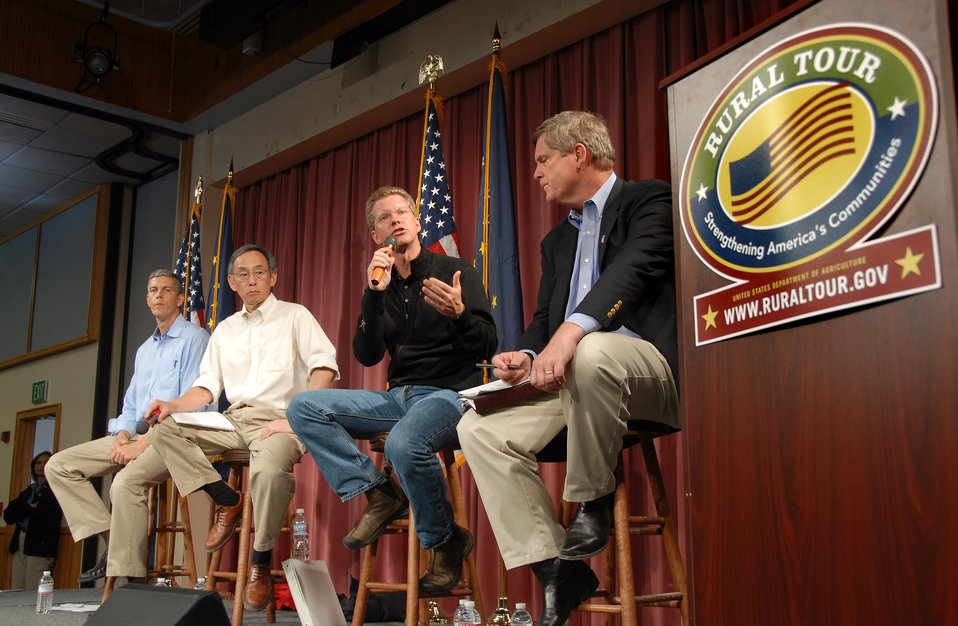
Rural Tour 0172

Rural Tour Alaska Aug 2009